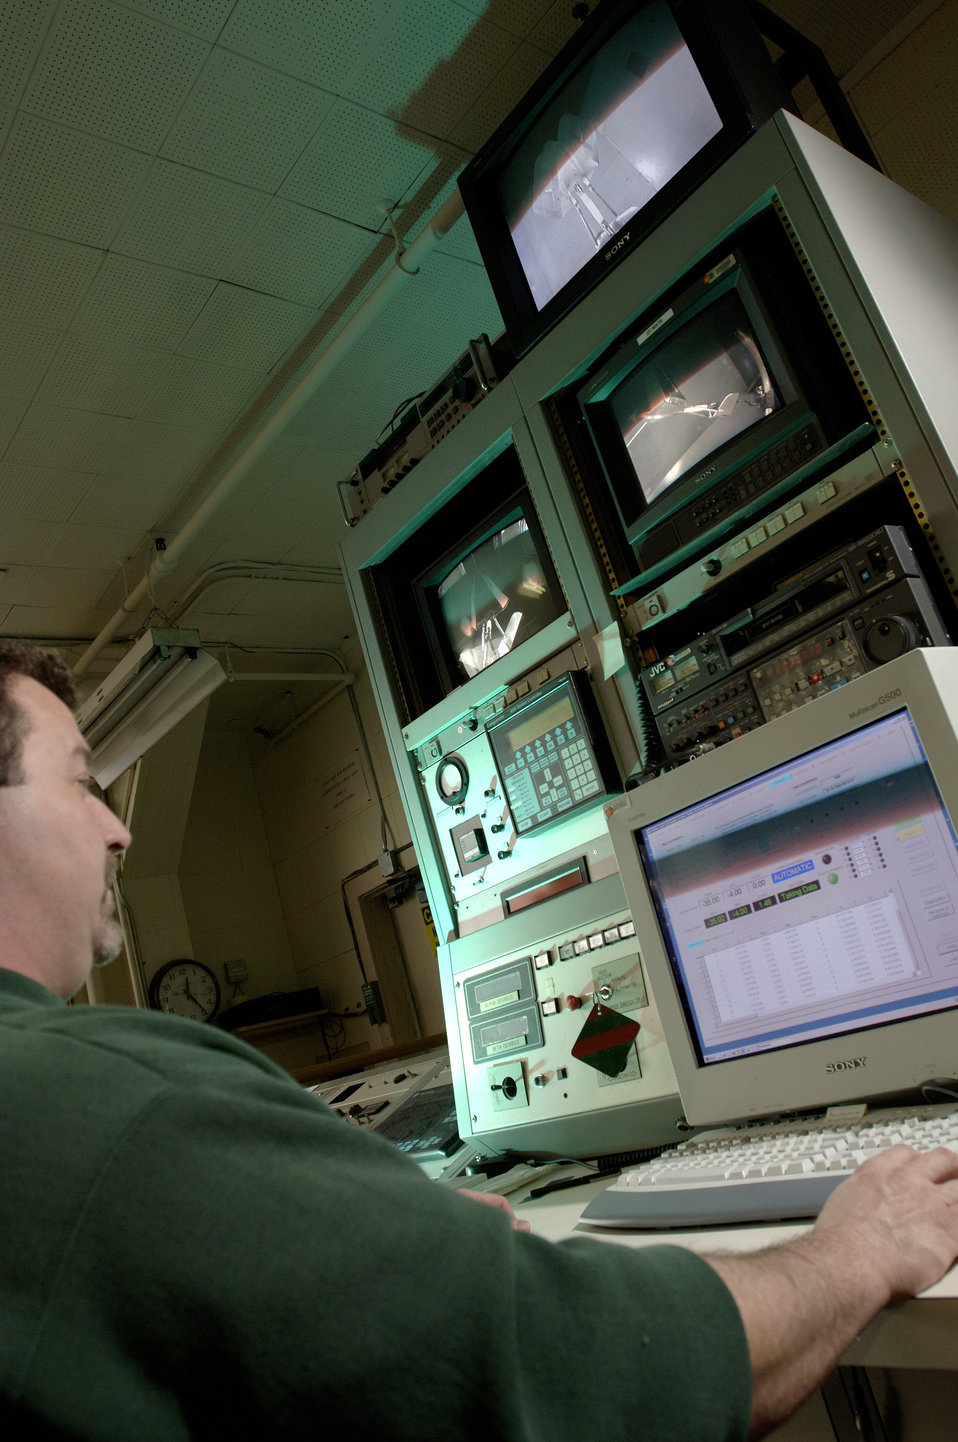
Into space

LANGLEY AIR FORCE BASE, Va. (AFPN) -- Earl Harris monitors the wind and air speed data from the aerial regional-scale environmental survey of Mars airplane collected from NASA's 12-foot low-speed tunnel here. The data will be used to verify plane's aerodynamics and stability. Mr. Harris is a mechanical engineering technician with the National Aeronautics and Space Administration.